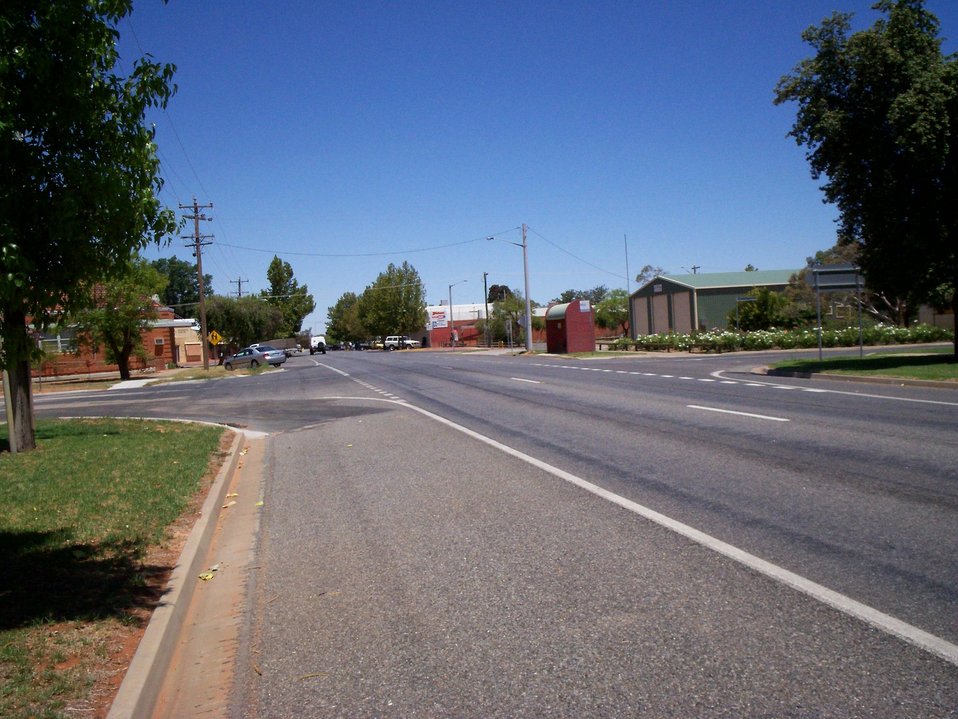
Tapio St, the main street of en:Dareton, New South Wales. Photograph taken by myself, en:January 10, en:2007. Licence en:Category:Images of New South Wales